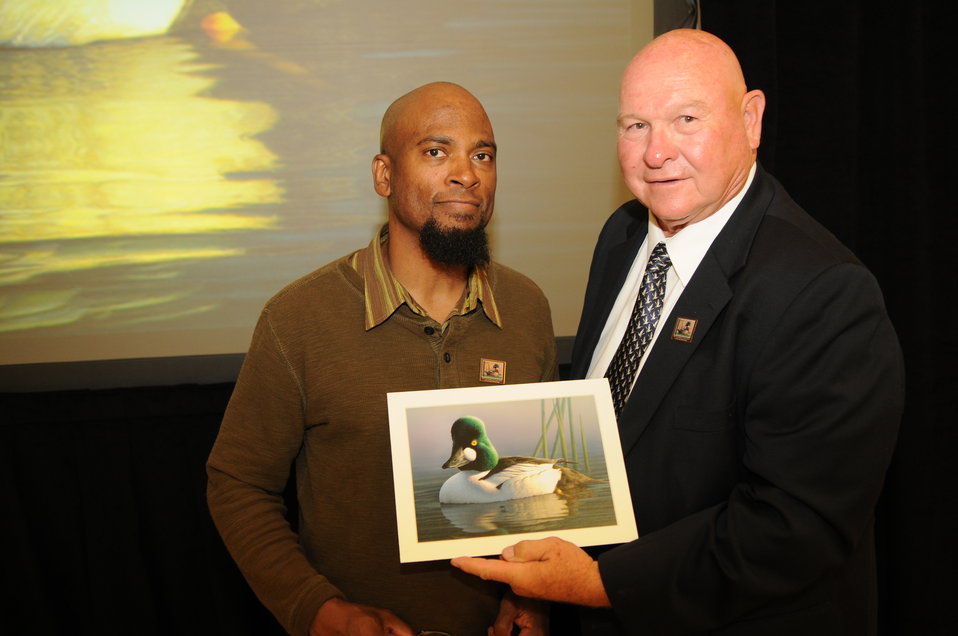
Everyone Loves a Winner

The U.S. Fish & Wildlife Service sponsored the 2012 Federal Duck Stamp Art Contest September 28 and 29 in Ogden, Utah, at Weber State University. A panel of five judges was responsible for choosing the art work used to design the 2013-2014 Migratory Bird Hunting and Conservation Stamp.